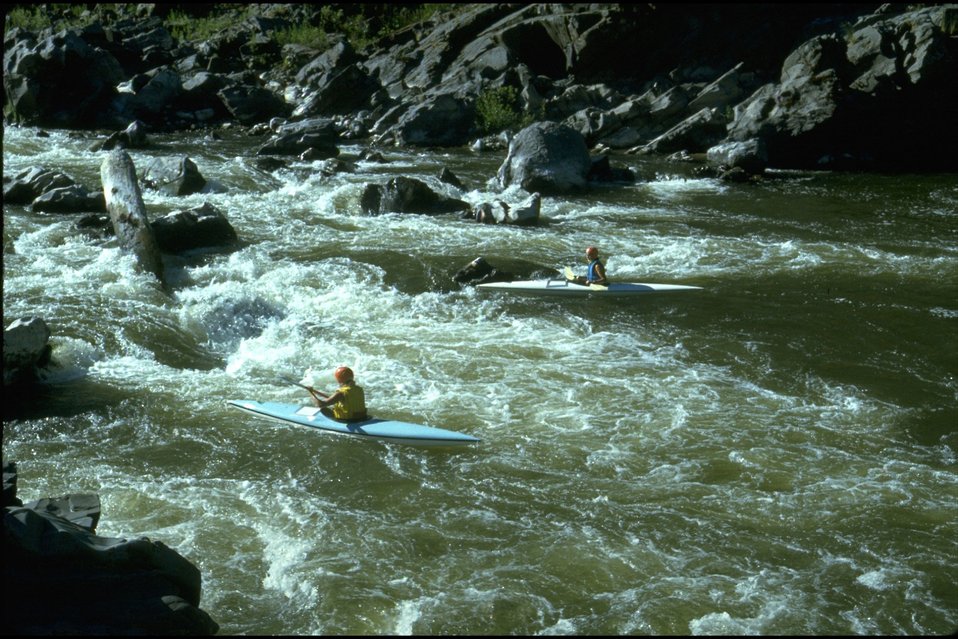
Rogue River - Blosom Bar, BLM Kayak Patrol.